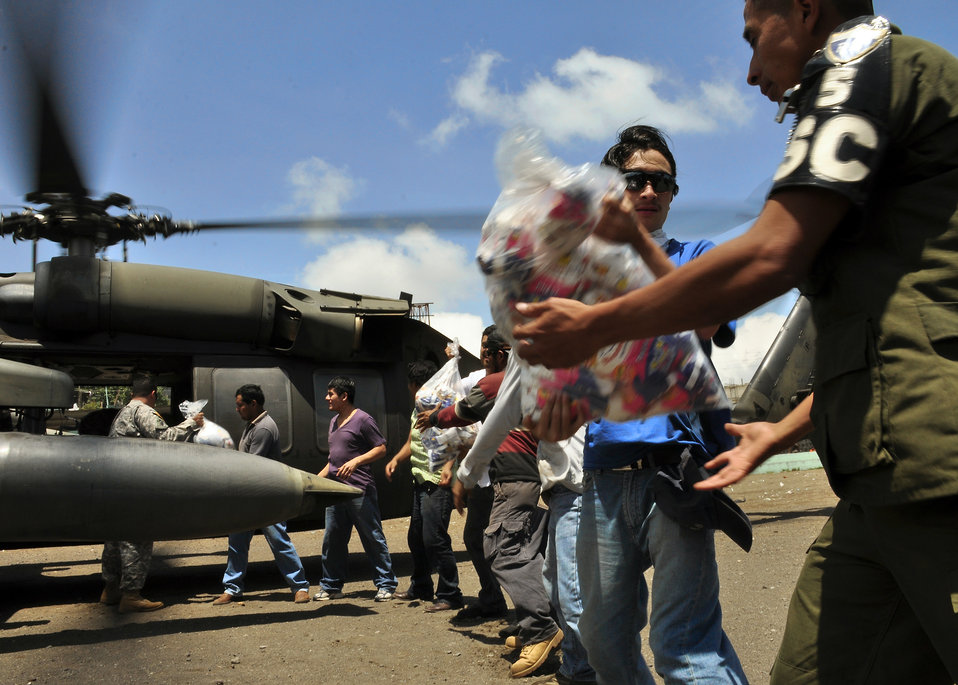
Joint Task Force-Bravo members help victims of Guatemala disaster

Guatemalans begin offloading food and water from a Joint Task Force-Bravo UH-60 Blackhawk June 6, 2010, in the community of Santiago Atitlan, Guatemala. Joint Task Force-Bravo's helicopters have transported approximately 53,000 pounds of relief supplies to 14 Guatemalan communities since June 2 to support the Guatemalan government's disaster relief efforts following the Pacaya volcano eruption and Tropical Storm Agatha.